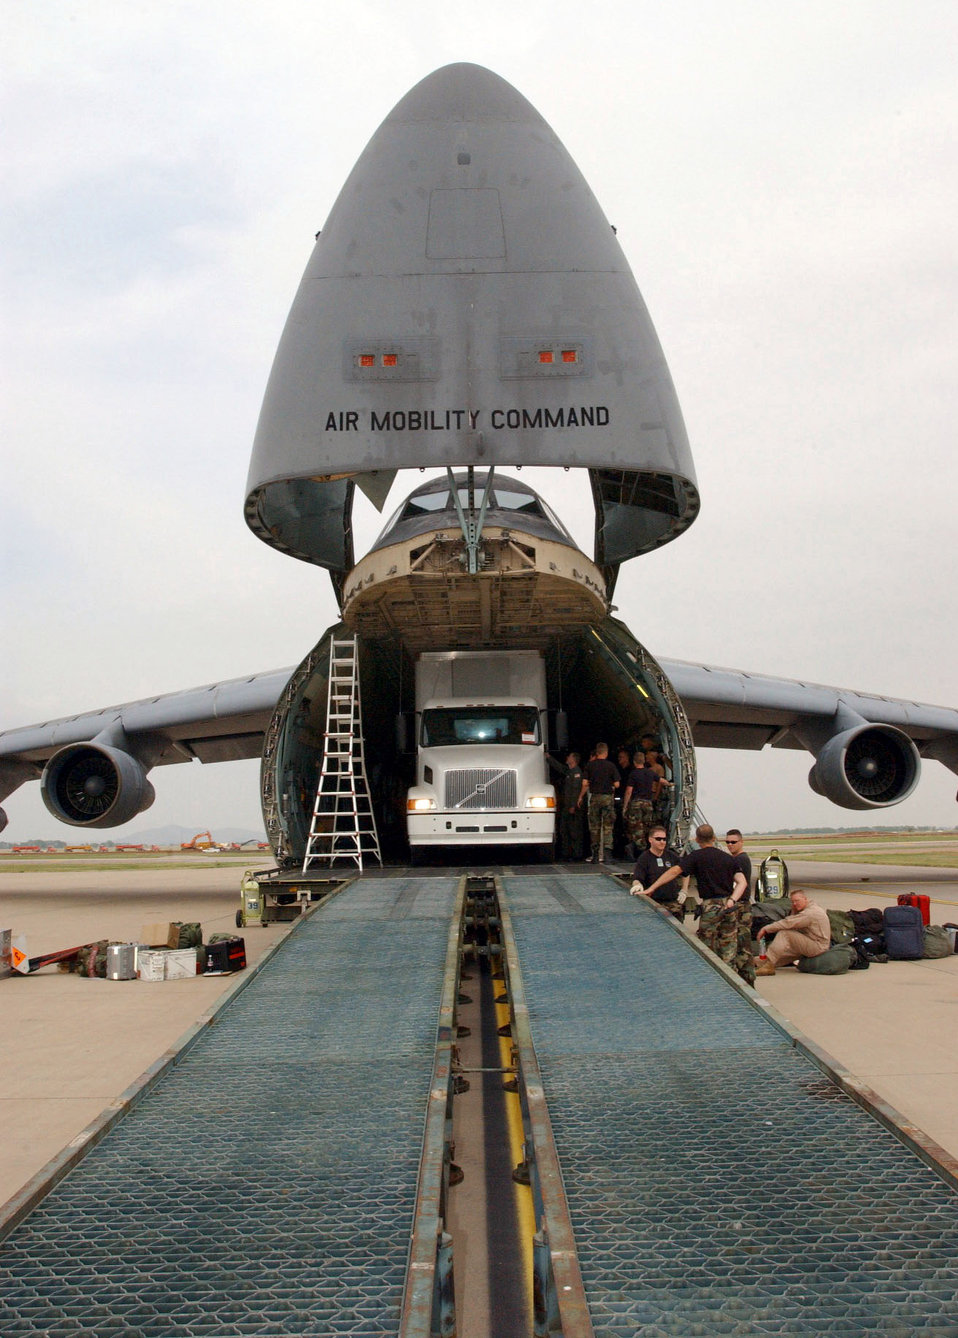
Open wide

ALTUS AIR FORCE BASE, Okla. -- Crews from the 97th Air Mobility Wing here and the 60th AMW at Travis Air Force Base, Calif., load a semitrailer carrying humanitarian cargo into a C-5 Galaxy for delivery to a forward-deployed location supporting Operation Iraqi Freedom. With clearance coming as close as 4 inches at one point, the trailer took about five hours to load using a Minuteman Missile ramp. The C-5 is assigned to the 60th AMW.